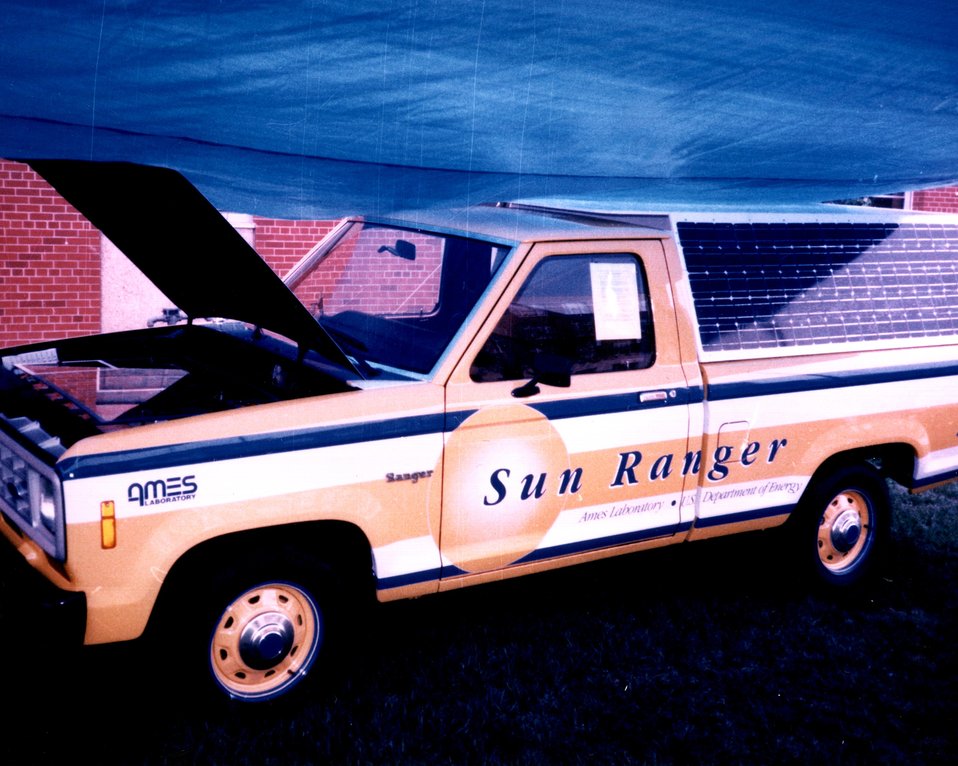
AMES LABORATORY'S 'SUN RANGER'

THE TRUCK'S 216-KILOGRAM (480-POUND) GAS ENGINE HAS BEEN REPLACED WITH AN ELECTRIC MOTOR AND NINE BATTERIES TOGETHER WEIGHING ONLY 81 KILOGRAMS (180 POUNDS). MOUNTED ON A PLYWOOD SHELL OVER THE PICKUP'S BED ARE 430 SILICON SOLAR CELLS. ITS CRUISING SPEED IN 35 MPH BUT IT CAN GO AS FAST AS 50 MPH AND TRAVEL 35-40 MILES ON BATTERIES ALONE. BE INSUFFICIENT (NO SUN), THE TRUCK CAN BE PLUGGED INTO AN ELECTRIC CHARGER.